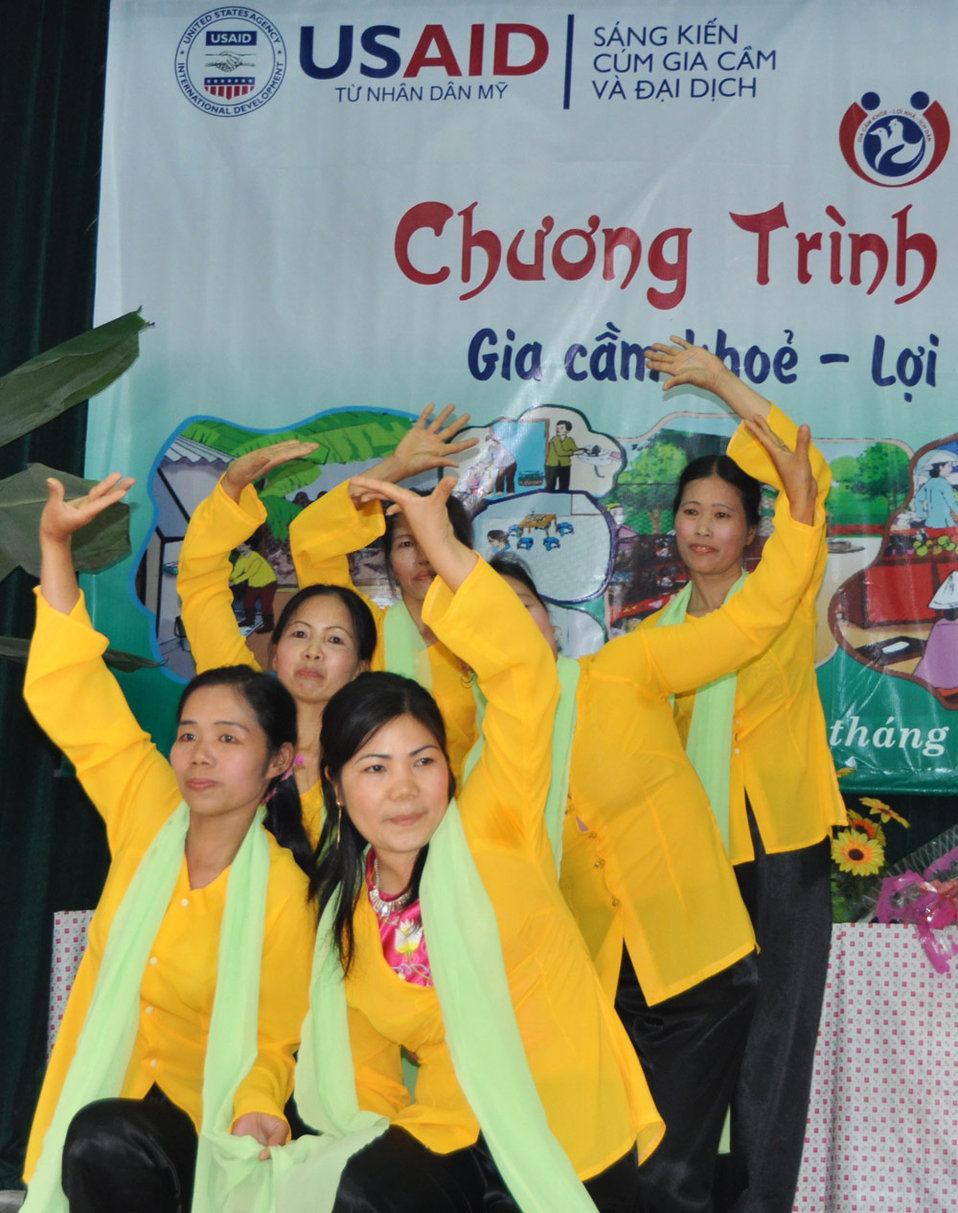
Residents in Vietnam's Tien Ngoai Commune, Duy Tien District, Ha Nam Province, discuss ways to prevent and control avian and pandemic influenza.